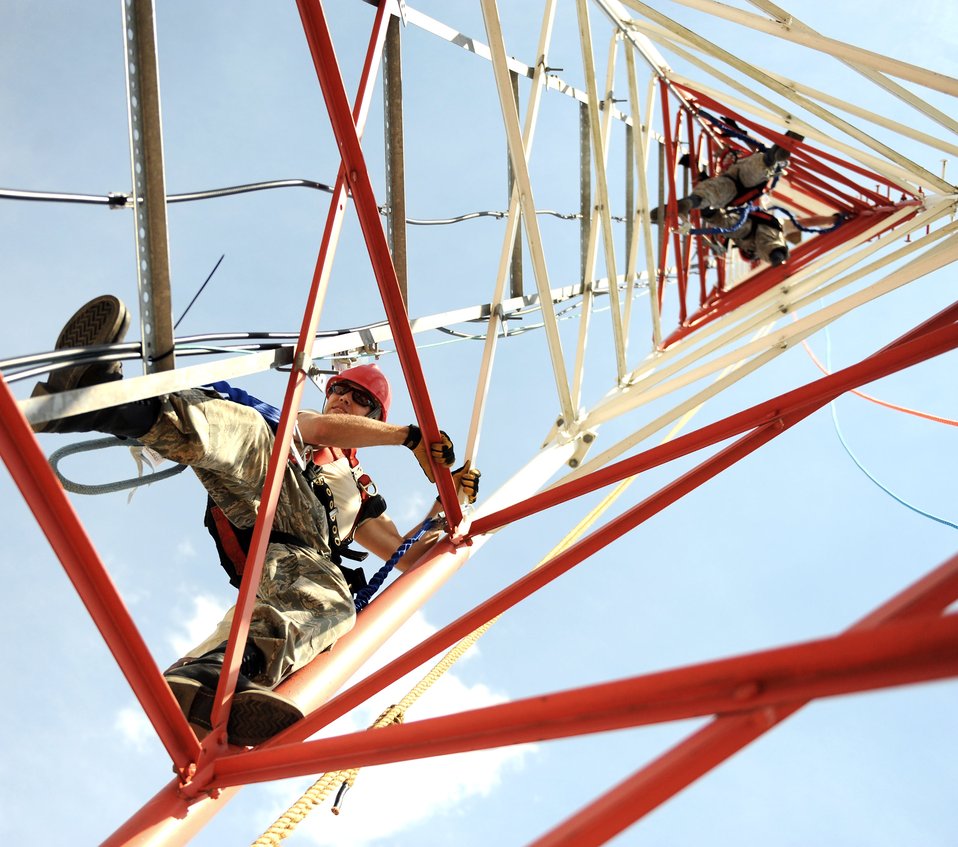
Upgrading communications tower

Airmen make their way up the communications tower July 22, 2010, at F.S. Gabreski Air National Guard Base in Westhampton Beach, N.Y., to improve the grounding system and install a lightning mast and two new multiband antennas. They are assigned to the New York Air National Guard's 213th Engineering Installation Squadron at nearby Stewart ANGB in Newburgh.